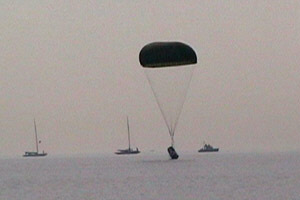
Canadian Arrow rocket crew cabin drop test Aug 2004. parachute deployment and landing.